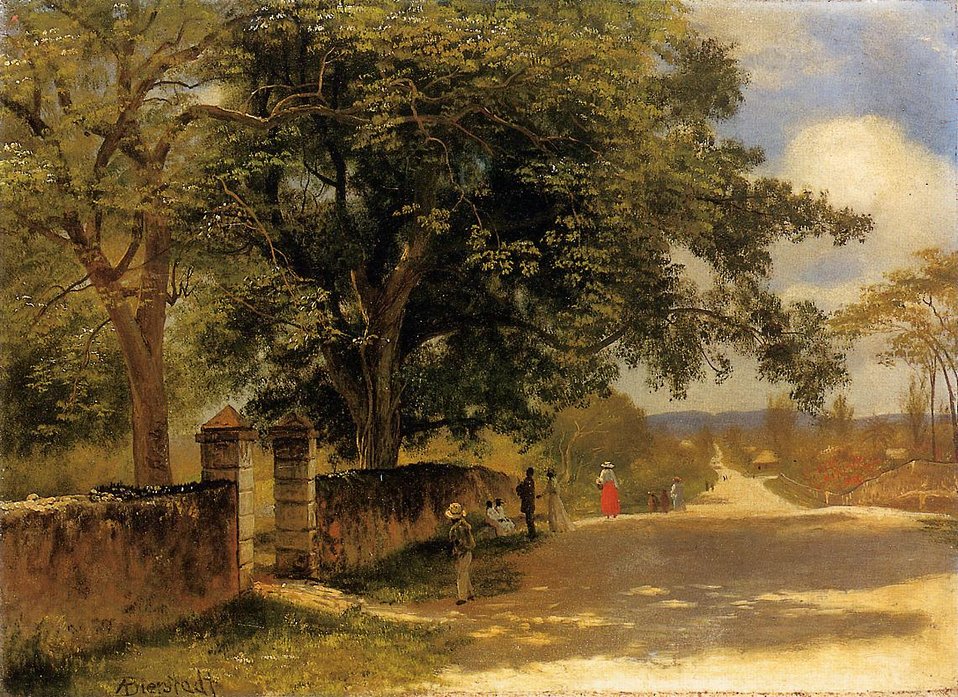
Bierstadt Albert Street in Nassau